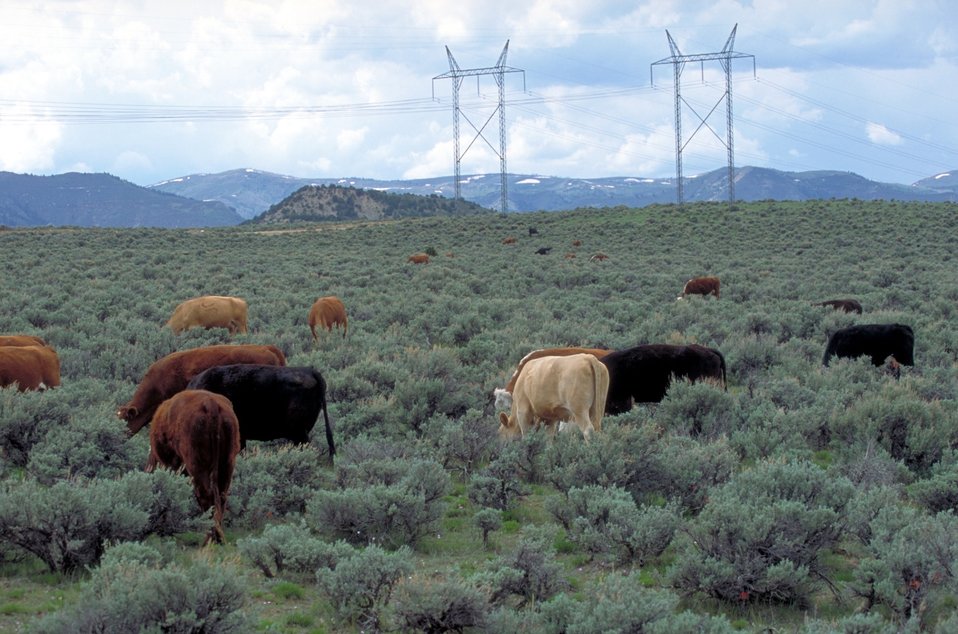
Livestock grazing on BLM lands near Price, Utah.